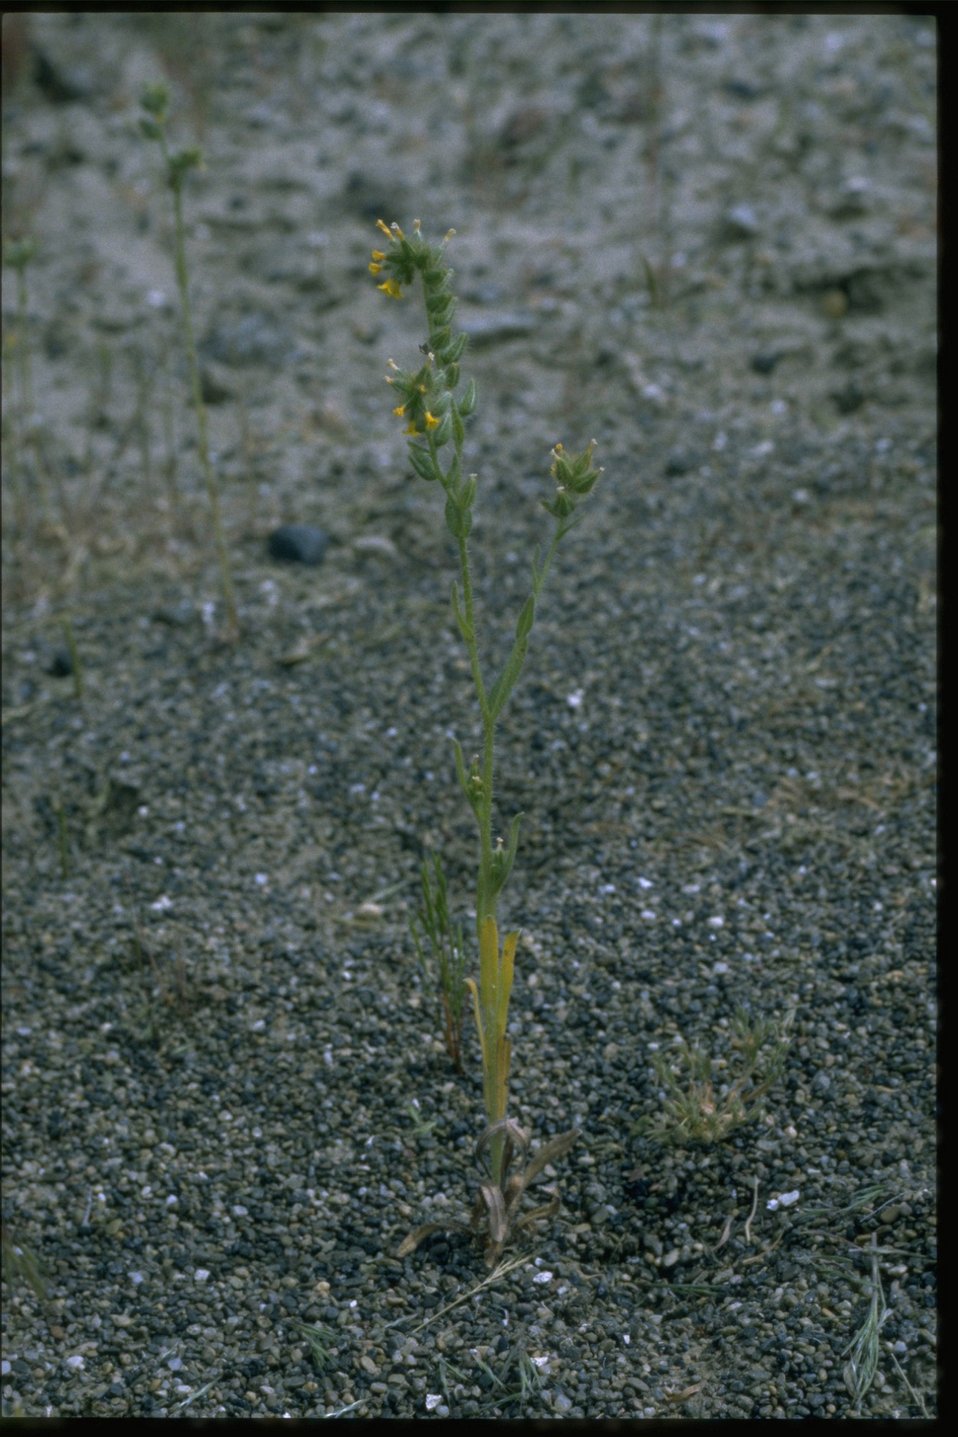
Farshot of Sandwort habitat.